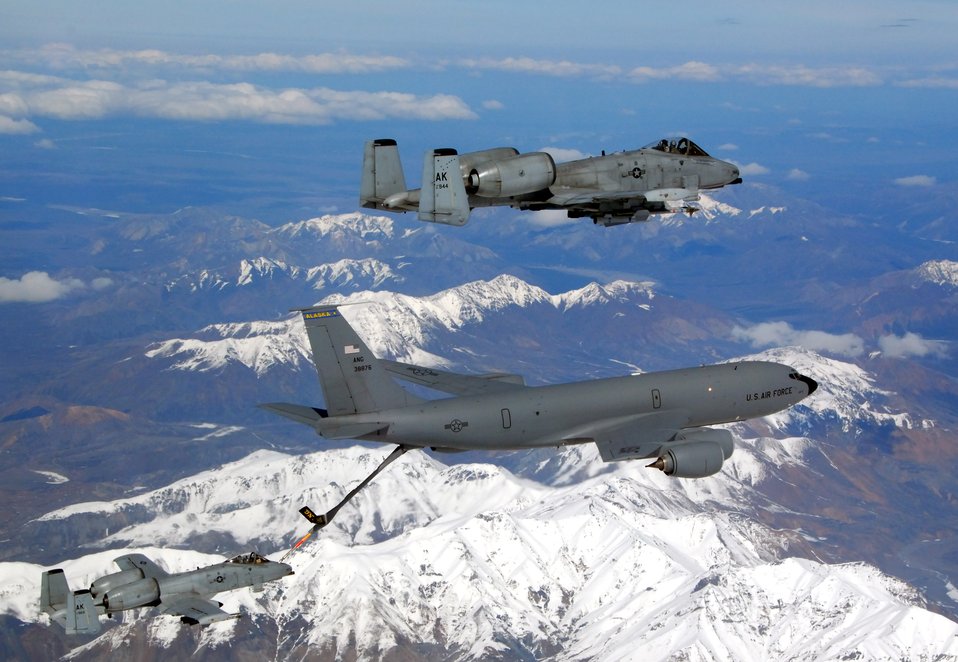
Final flight for fighters

A KC-135 Stratotanker from the Alaska Air National Guard's 168th Air Refueling Wing flies in formation with two A-10 Thunderbolt IIs from the 355th Fighter Squadron May 29 over Alaska. The three aircraft assigned to Eielson Air Force Base, Alaska, flew in formation for the last time due to the deactivation of the 355th FS.